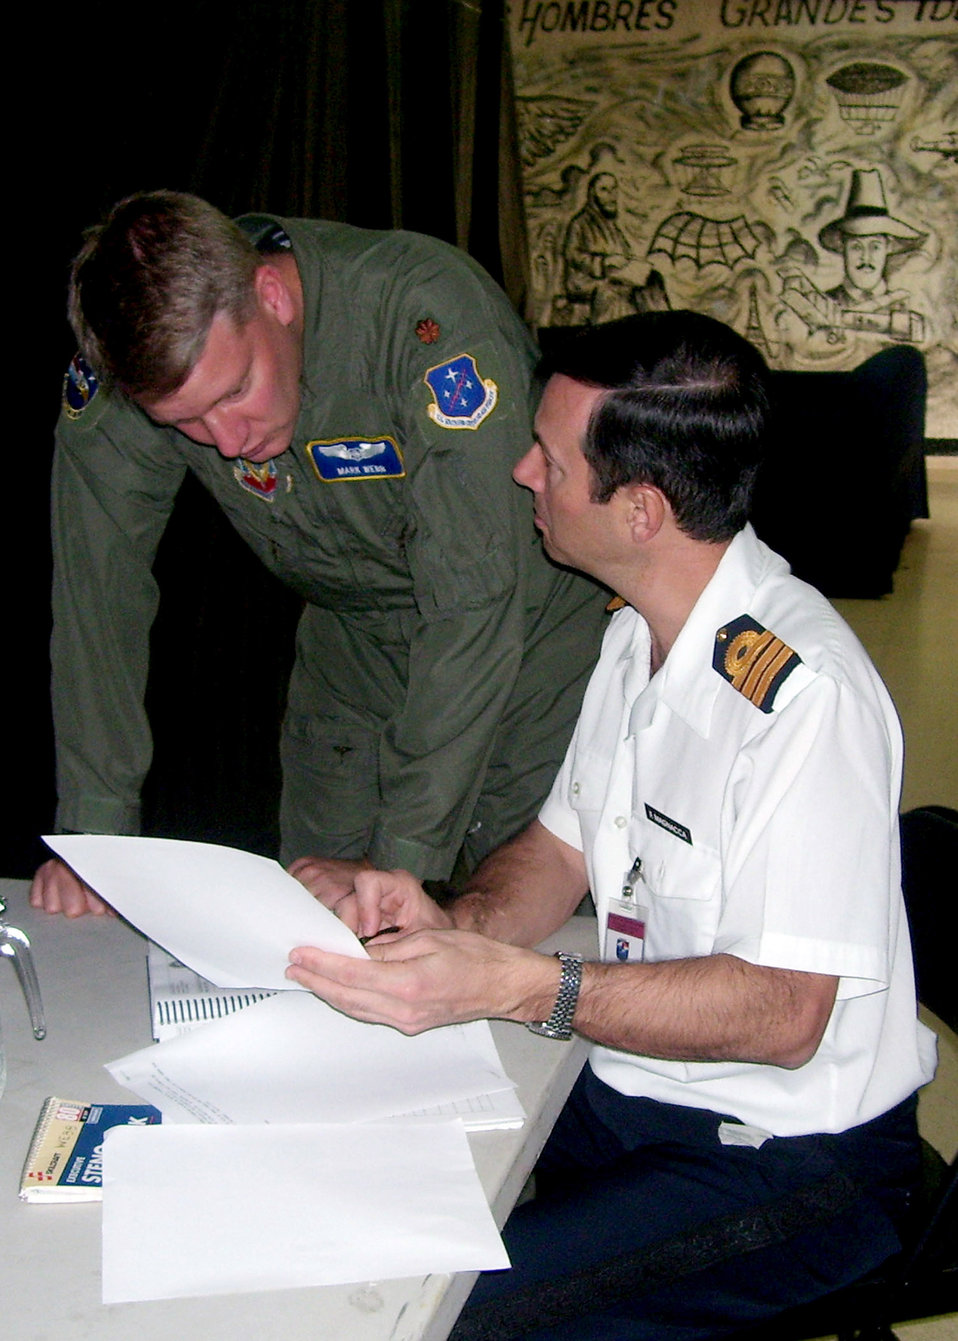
Airmen participate in joint exercise along Panama Canal

Argentinean Cmdr. Fabian Magnacca and Maj. Mark Webb discuss last minute flight communication details at Tocumen International Airport in Panama during PANAMAX 2007 Sept. 1. Civil and military forces from 19 countries will participate in PANAMAX, a U.S. Southern Command joint and multi-national training exercise co-sponsored with the Government of Panama, in the waters off the coasts of Panama and Honduras. Major Webb is assigned to the Combined Forces Air Combatant Command.